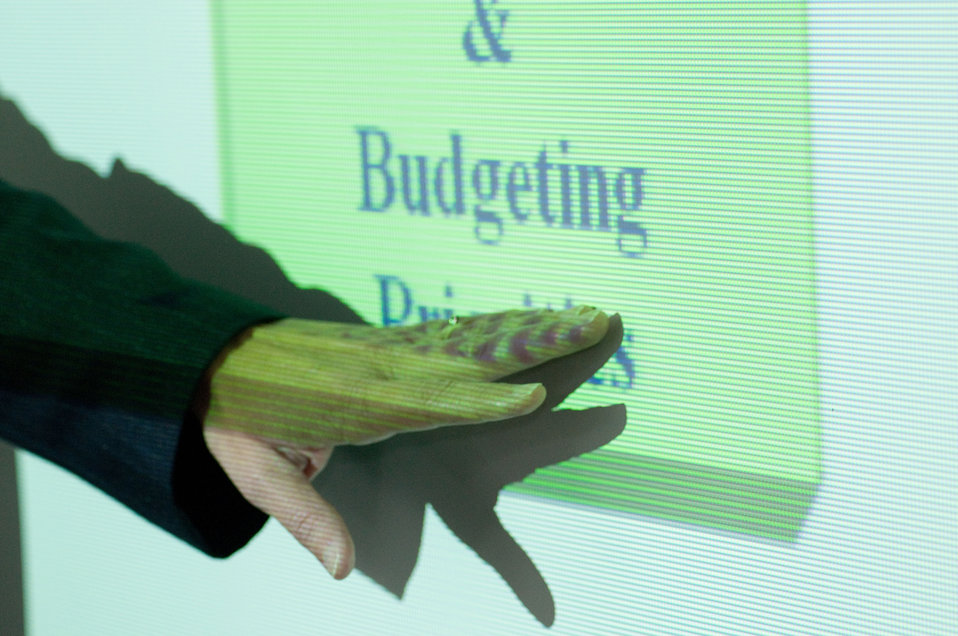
U.S. Department of Agriculture (USDA), Agriculture Research Service (ARS), International Research Program's Jennifer Woodward-Greene, spoke about the organization of USDA and ARS with the Afghan Ministry of Agriculture's Borlaug Fellows at the George Washington Carver Center, in Beltsville, MD on Wednesday Sept. 21, 2011.